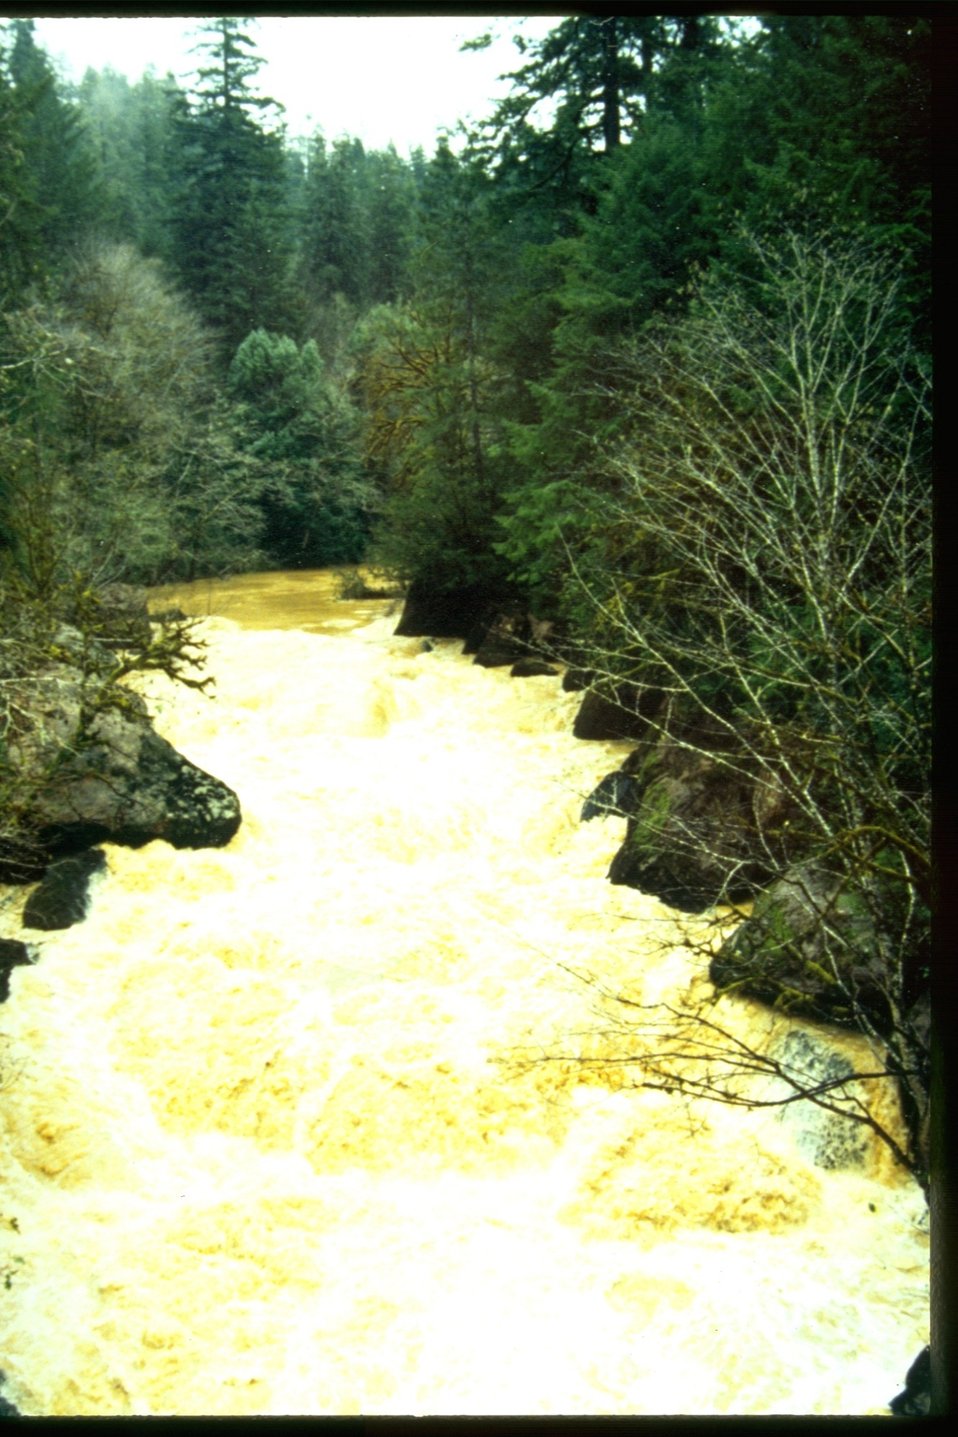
Mill Creek, upstream.